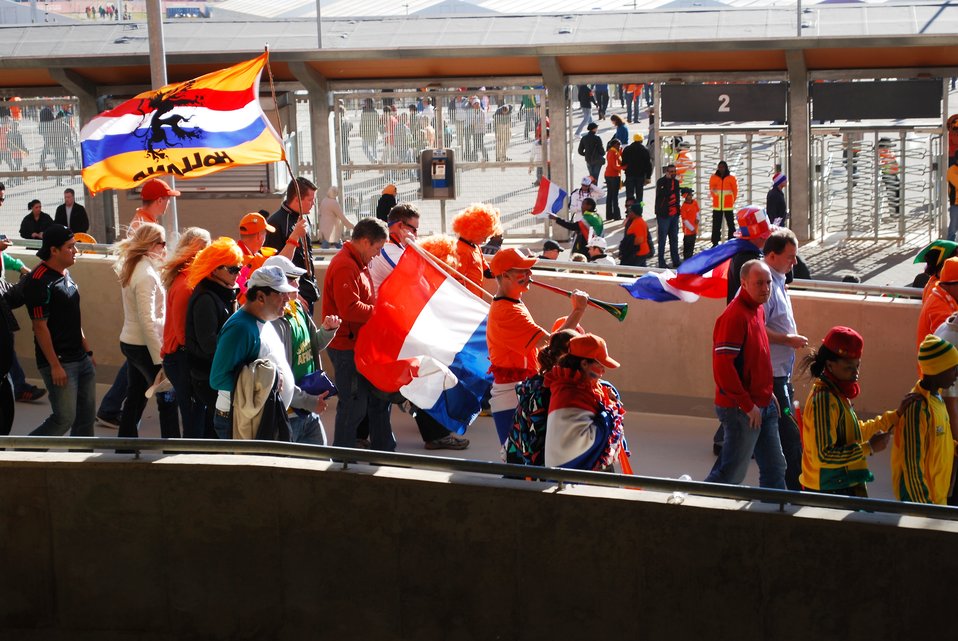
Dutch Fans Cheer

Dutch fans enter Soccer City Stadium in Johannesburg, South Africa, to watch the Netherlands play Denmark on June 14, 2010.